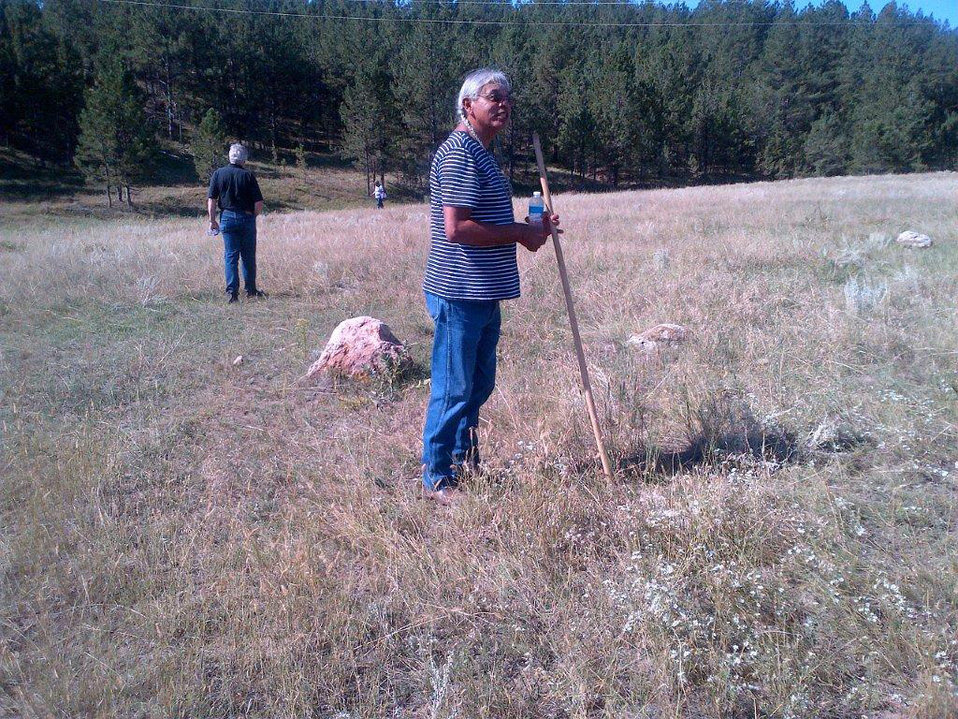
Sacred site

Standing Rock Sioux cultural resource expert Tim Mentz Sr. explains the historical significance of the area that is now the Black Hills National Forest in South Dakota.